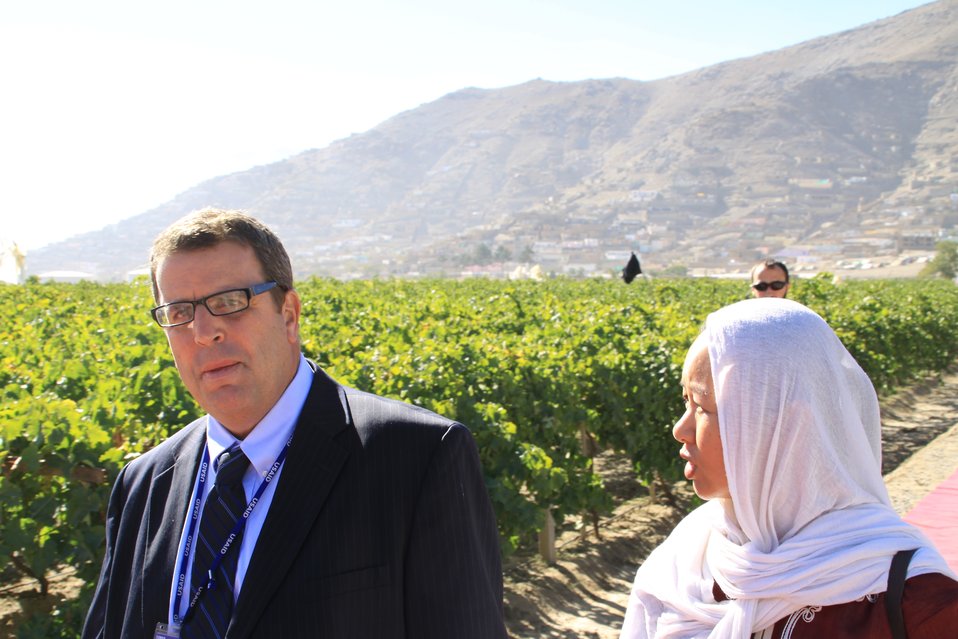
AVIPA Plus Wheat Seed Distribution 101005